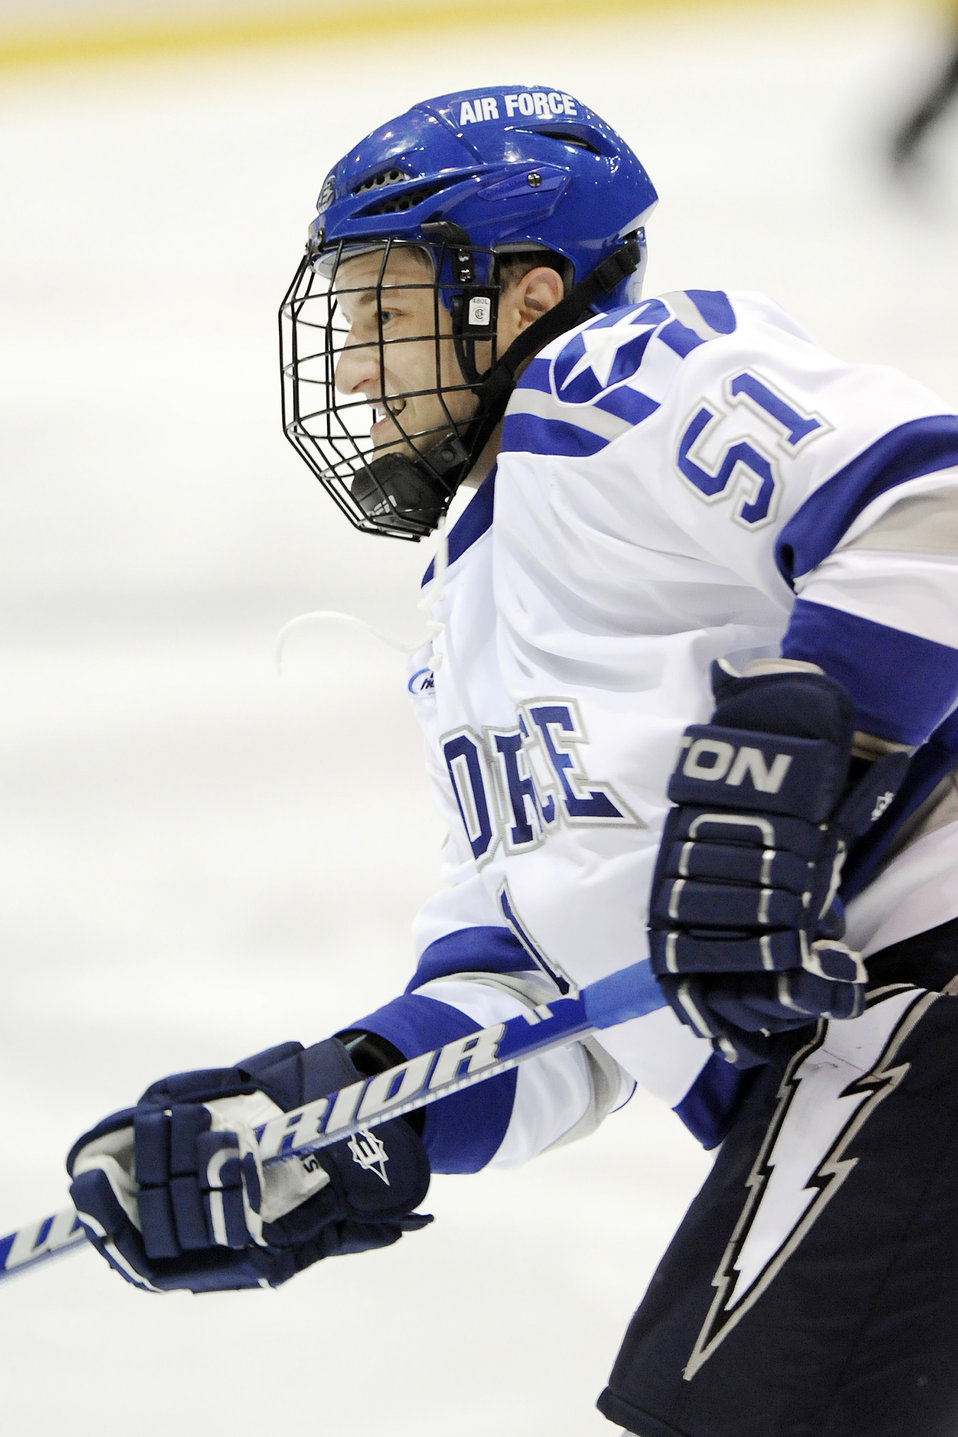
Falcons outskate UConn Huskies

Junior forward Matt Becker passes the puck as Air Force beat the University of Connecticut 2-1 at the Cadet Ice Arena Jan. 8, 2010 at the U.S. Air Force Academy, Colo.